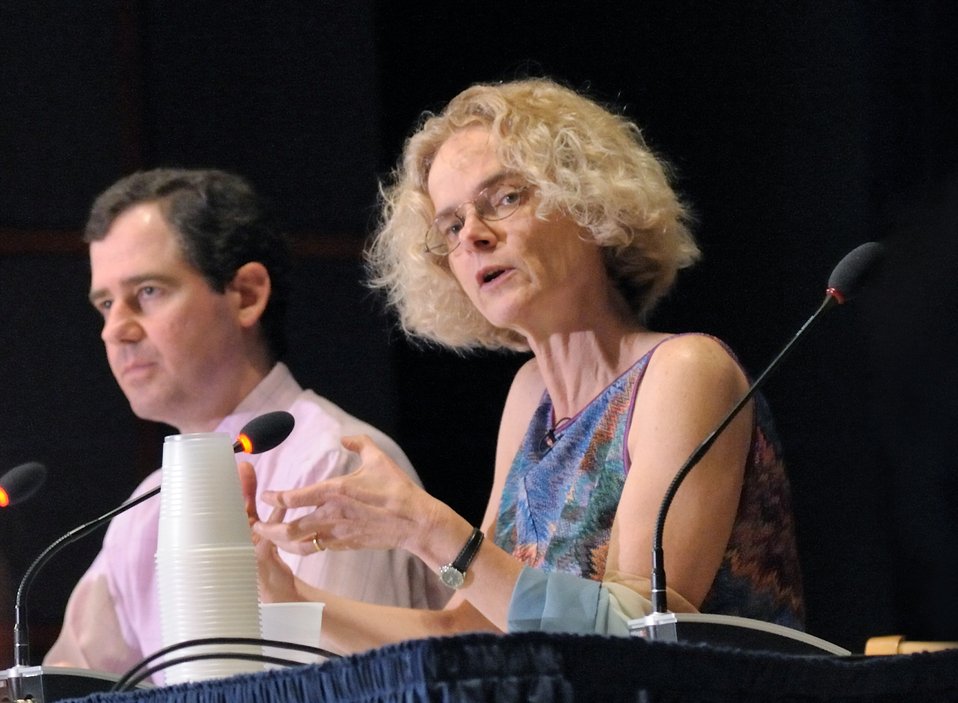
Panelists3 - APP Aug 2011

Expert panelists give their reactions following actors’ readings at NIDA’s Addiction Performance Project, held Aug 5 on the NIH Campus
(Pictured L-R: Dr. Paul Christo, pain medicine specialist at Johns Hopkins Medicine and Dr. Nora Volkow, NIDA Director)